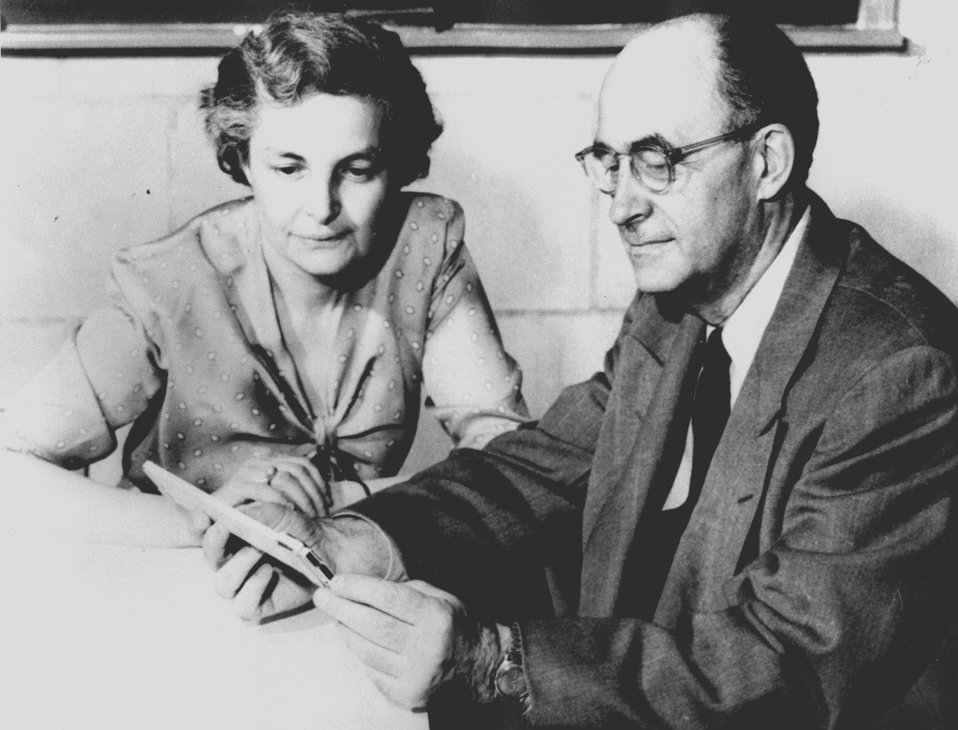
Laura and Enrico Fermi.